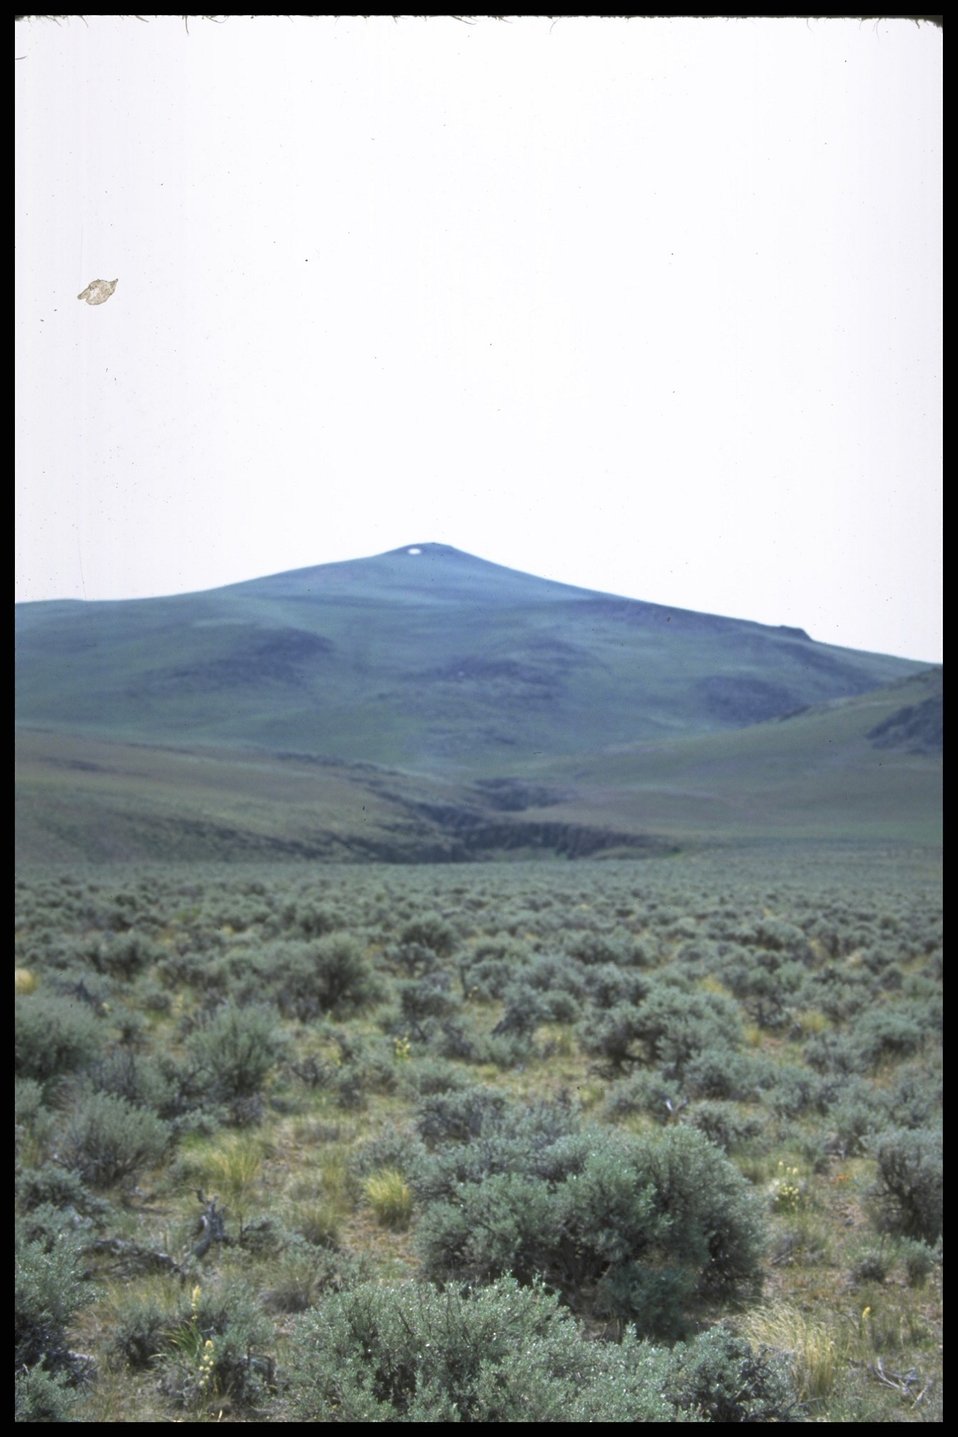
Scenic view of Beaty Butte, Lakeview District.